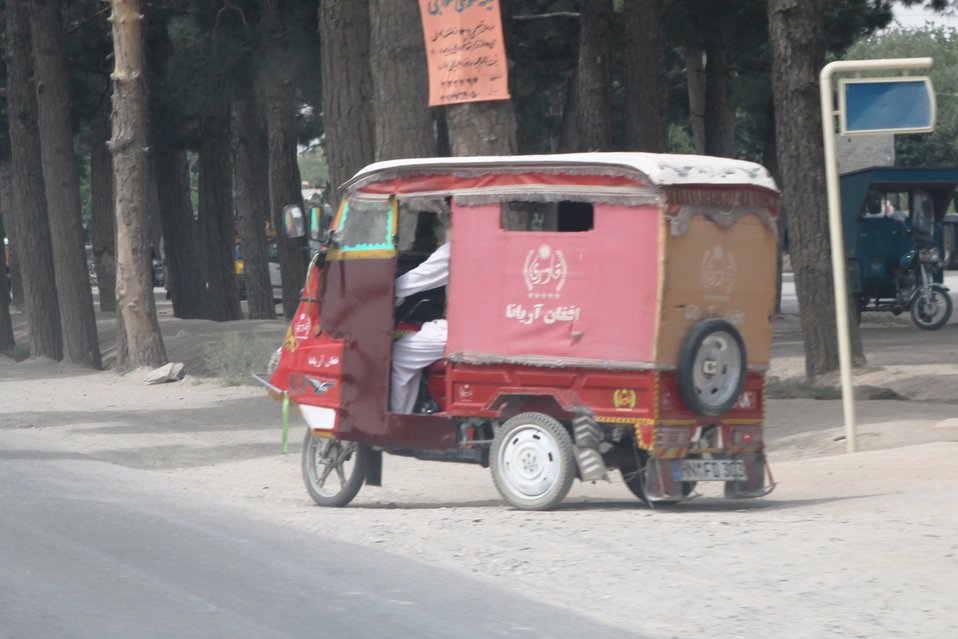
100525 Hirat Marble Conference 574